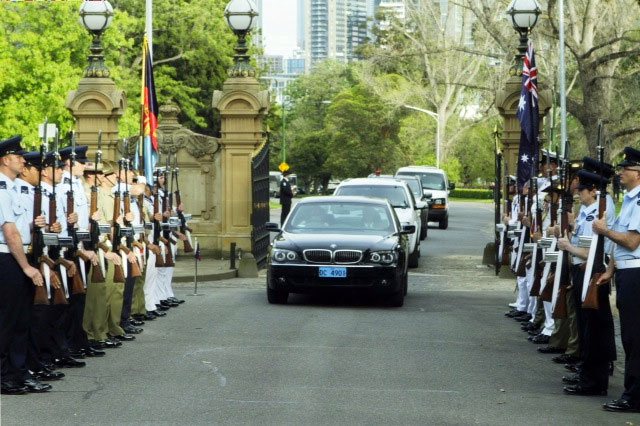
Secretary Clinton Is Welcomed to the Government House

U.S. Secretary of State Hillary Rodham Clinton is welcomed to the Government House by the Australian Honour Guard on November 8, 2010.